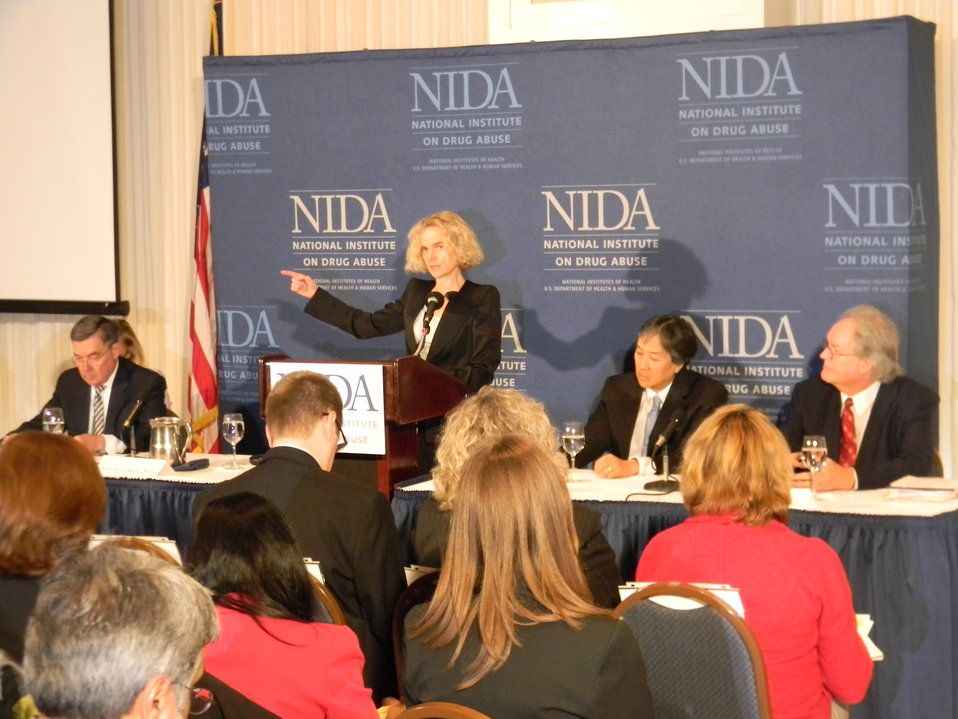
2011 Monitoring the Future Survey Released

L to R: Gil Kerlikowske and Drs. Nora Volkow, Howard Koh and Lloyd Johnston